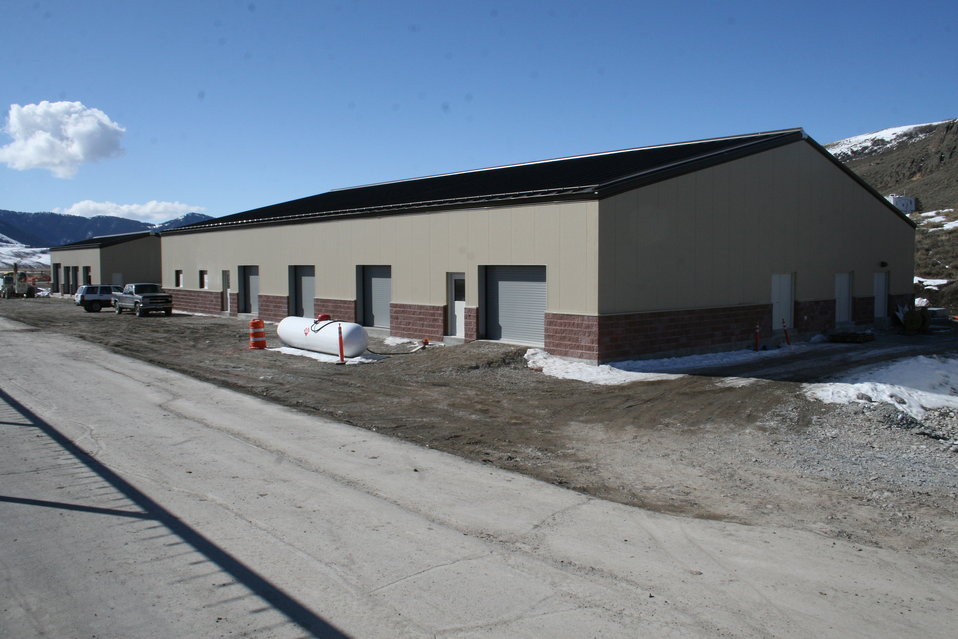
New Building at Jackson National Fish Hatchery

New hatchery building completed in August 2010 at Jackson National Fish Hatchery. The old hatchery buildings were not designed to safely withstand earthquake damage and snow loads and were replaced.